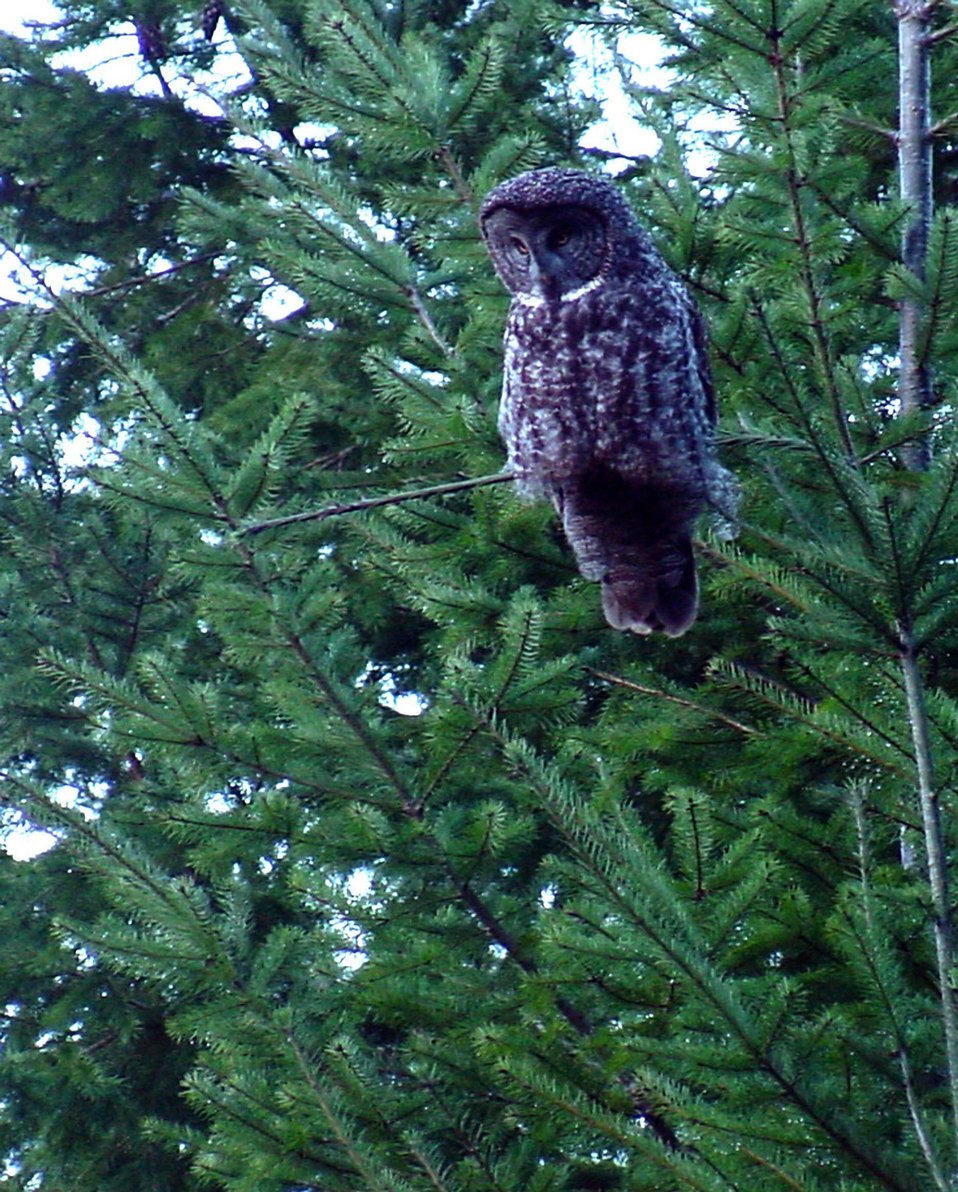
Great Gray Owl (Strix nebulosa) near Silver Falls.